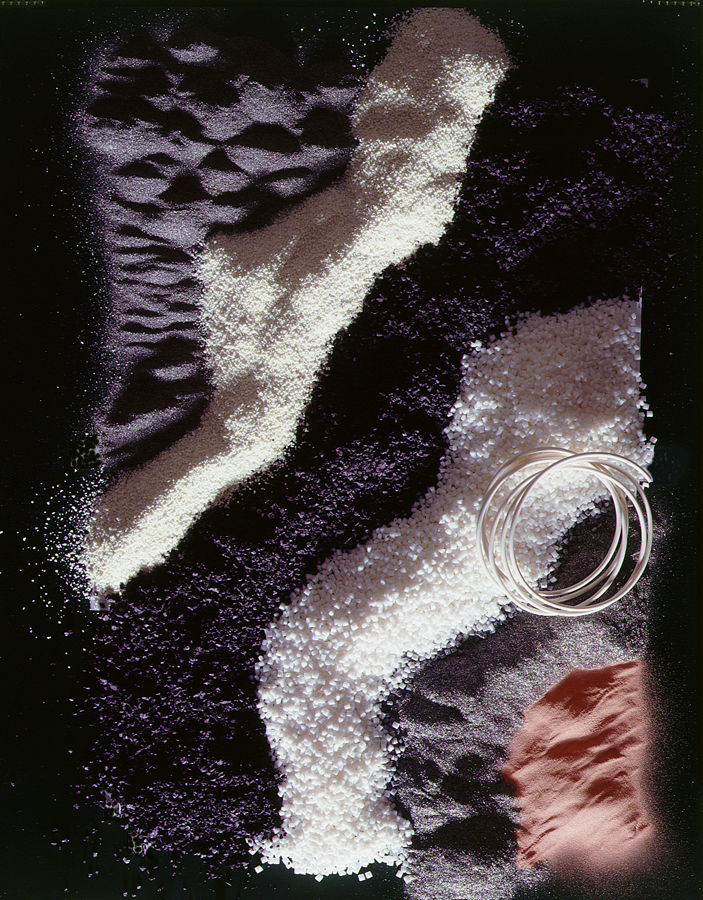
Power metals and binders.

The dark particles are ultrafine, high-quality powders produced from difficult to shape structural metals or ceramics. The white particles are polymer binders. By carefully mixing powders and binders, Ames Laboratory scientists can create unique blends to make components with unlimited and complex shapes.